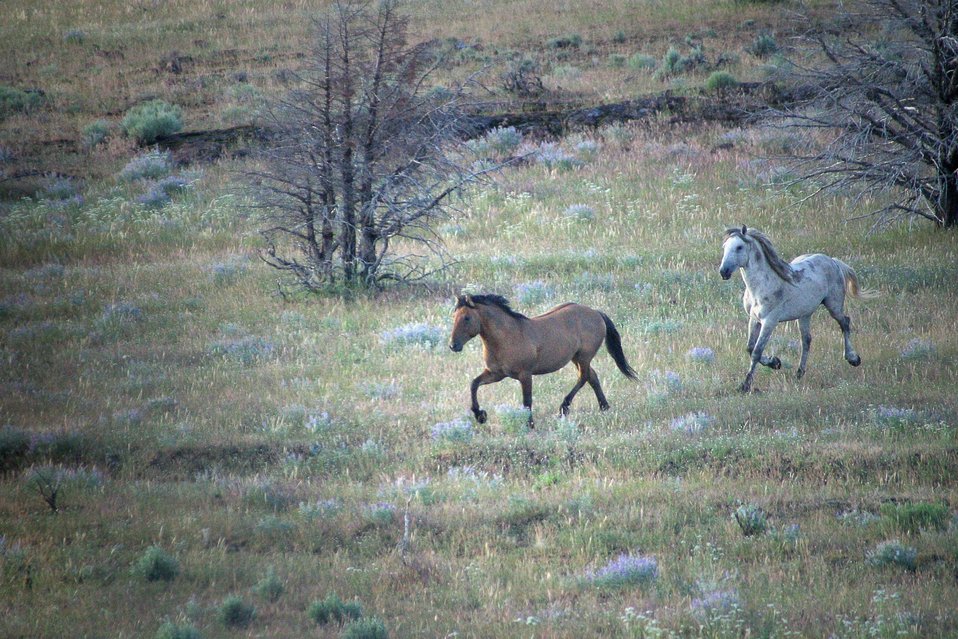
Wild Horse(s) in the Kiger Wild Horse Herd Management Area.